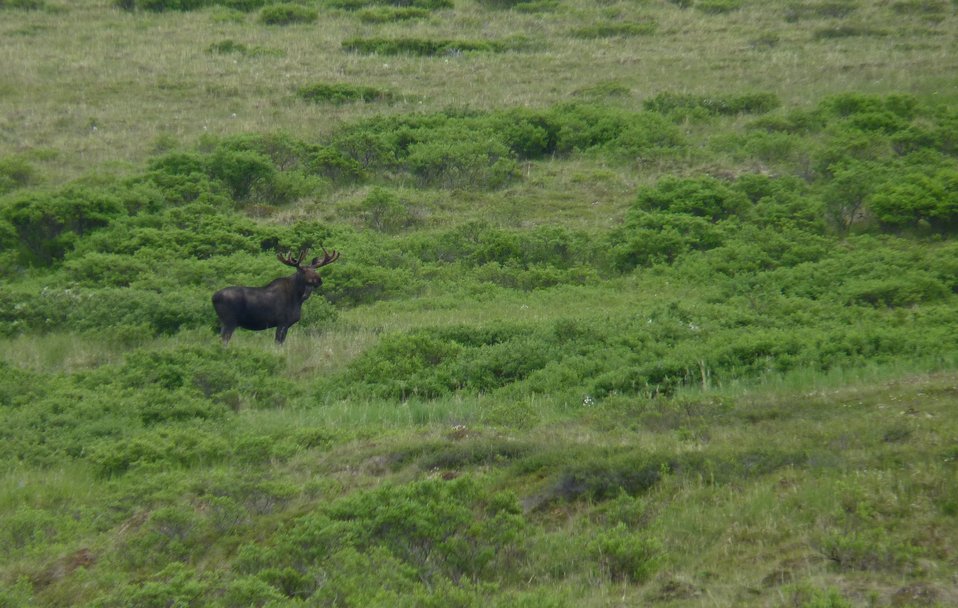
Moose

Andreafsky Wilderness, Yukon Delta National Wildlife Refuge